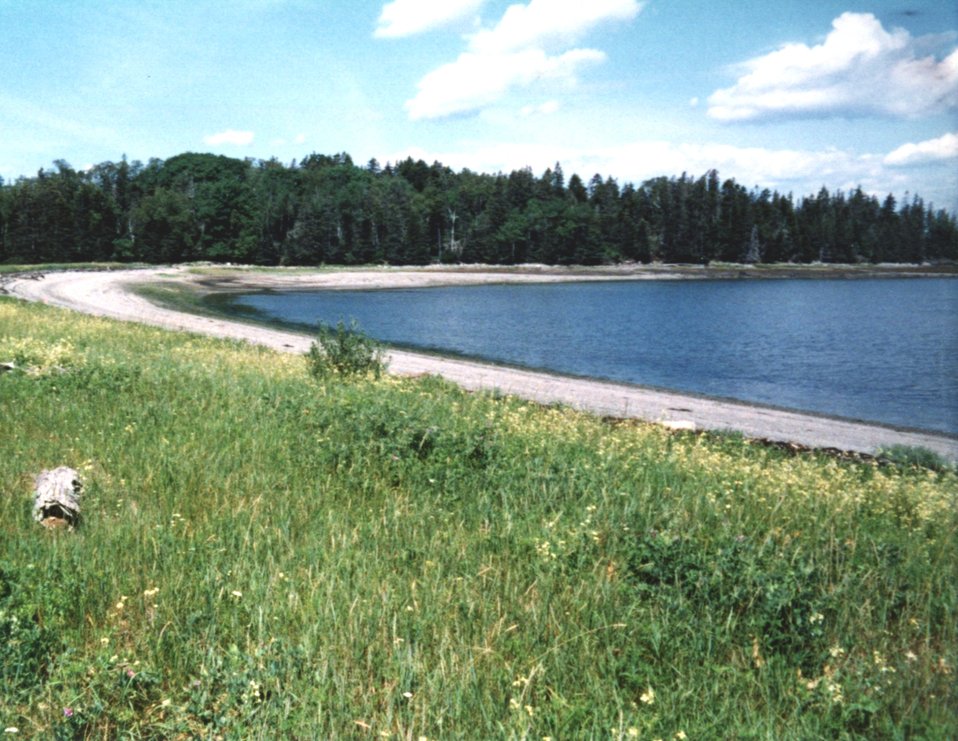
Philbrook Cove on 700 Acre Island.